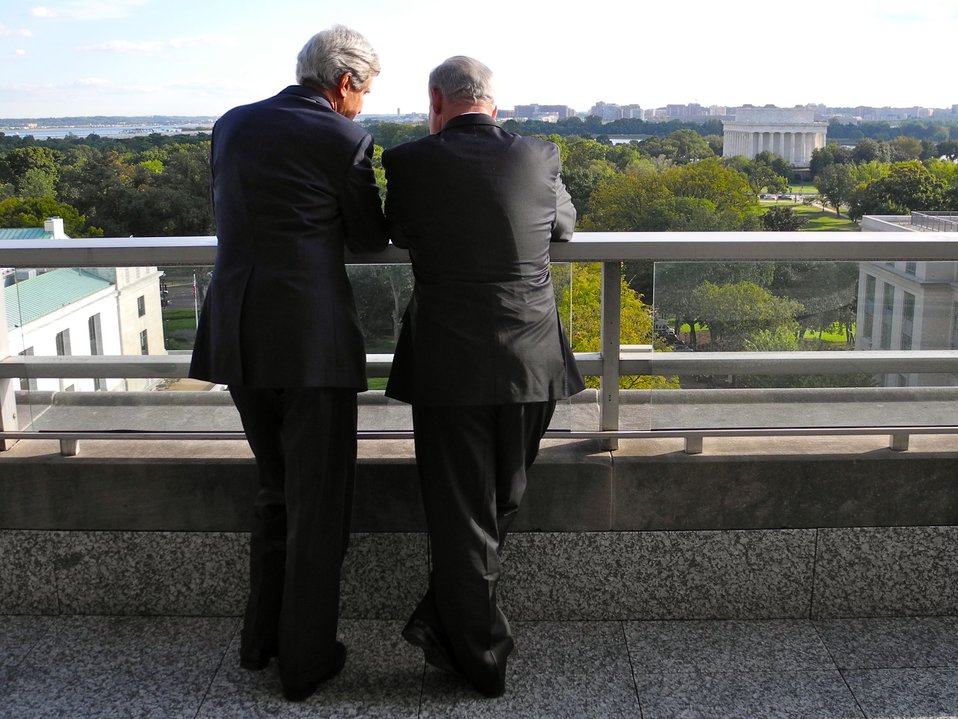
Secretary Kerry Shows Israeli Prime Minister Netanyahu the View From the Terrace

U.S. Secretary of State John Kerry shows Israeli Prime Minister Benjamin Netanyahu the view from the terrace of the State Department after their meeting in Washington, D.C., on September 30, 2013.